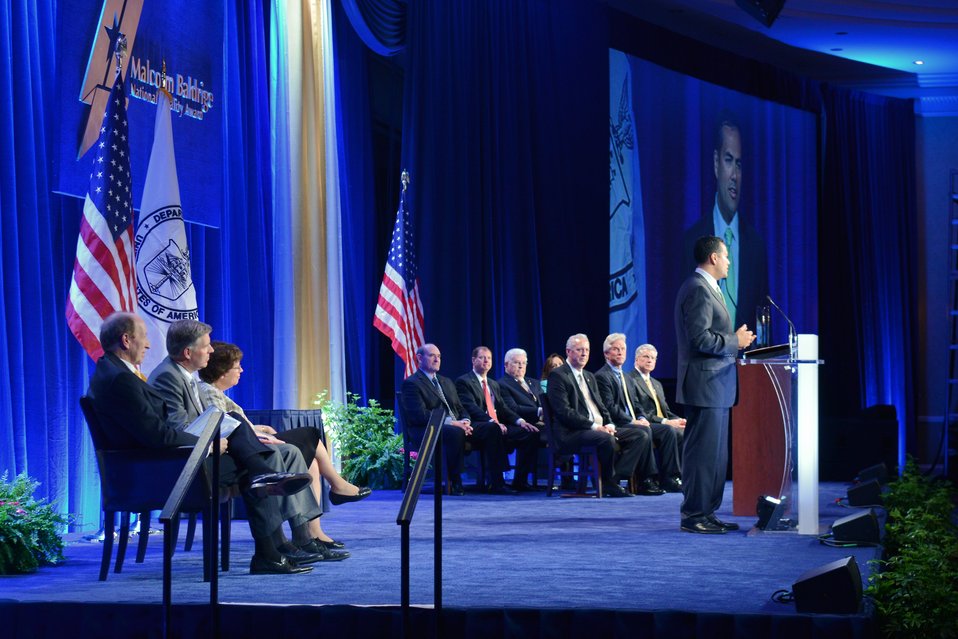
View of Stage 2012 Baldrige Award Ceremony

2012 Baldrige Award Ceremony stage view; City of Irving City Manager Tommy Gonzalez speaking; also on stage left to right– George Benson, Chair, Foundation for the Malcolm Baldrige National Quality Award; Patrick Gallagher, Under Secretary for Standards and Technology and Director, NIST; Rebecca Blank, Deputy Secretary, US Department of Commerce; (back row, left to right) Randy O’Neal, Vice President, Production Operations, Lockheed Martin Missiles and Fire Control; John Cole, Vice President of Business Development, MESA; Bobby Martin, Chairman of the North Mississippi Health Services Board of Directors; Lynda Johnson, Human Resources Director and Chief Performance Officer, City of Irving, Texas; (front row, left to right)